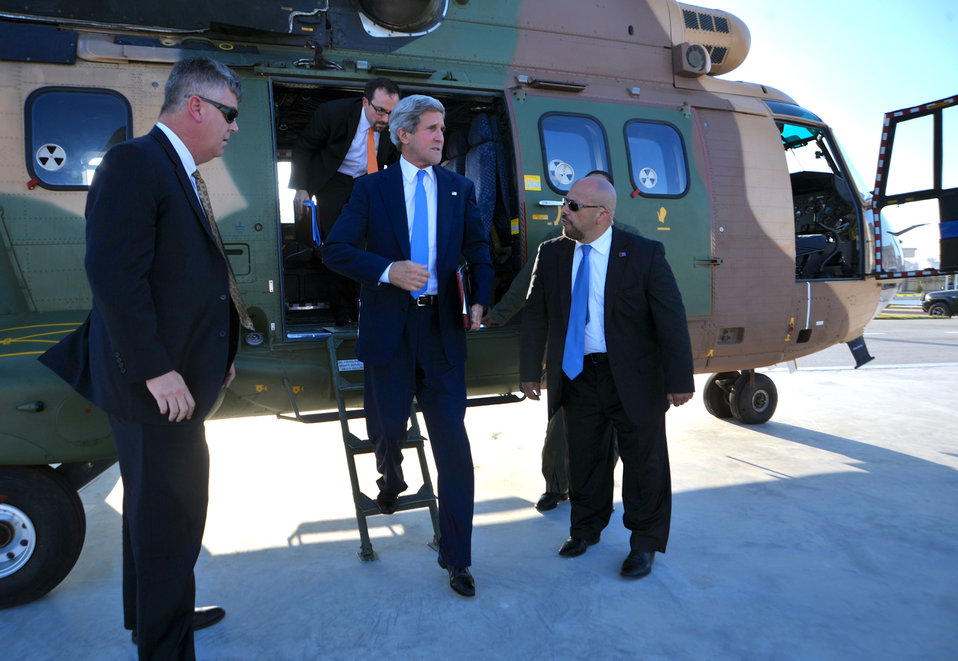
Secretary Kerry Arrives in Ramallah

U.S. Secretary of State John Kerry steps off a helicopter after flying from Amman, Jordan, to Ramallah, West Bank, to meet with Palestinian Authority President Mahmoud Abbas on July 19, 2013.